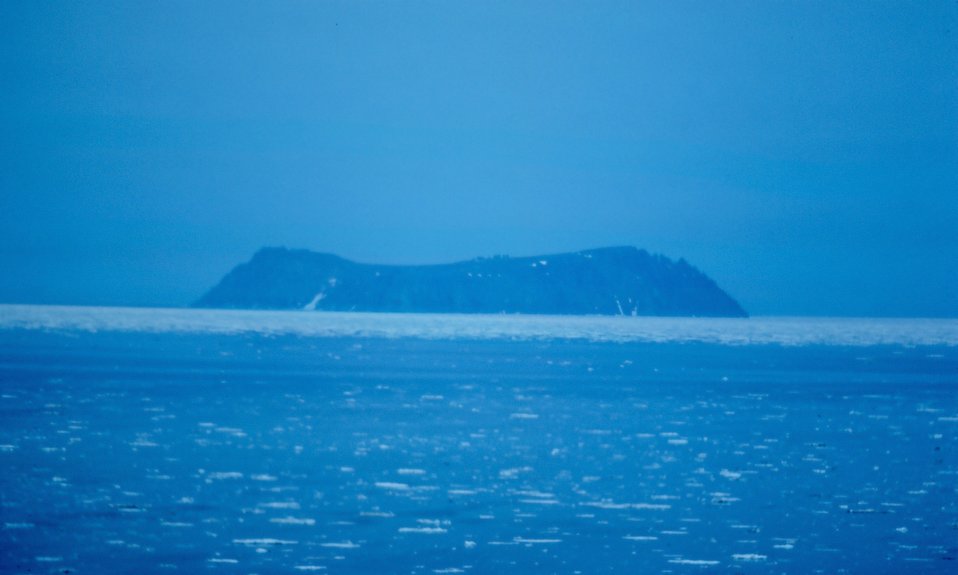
King Island seen from a distance before the ice broke up.